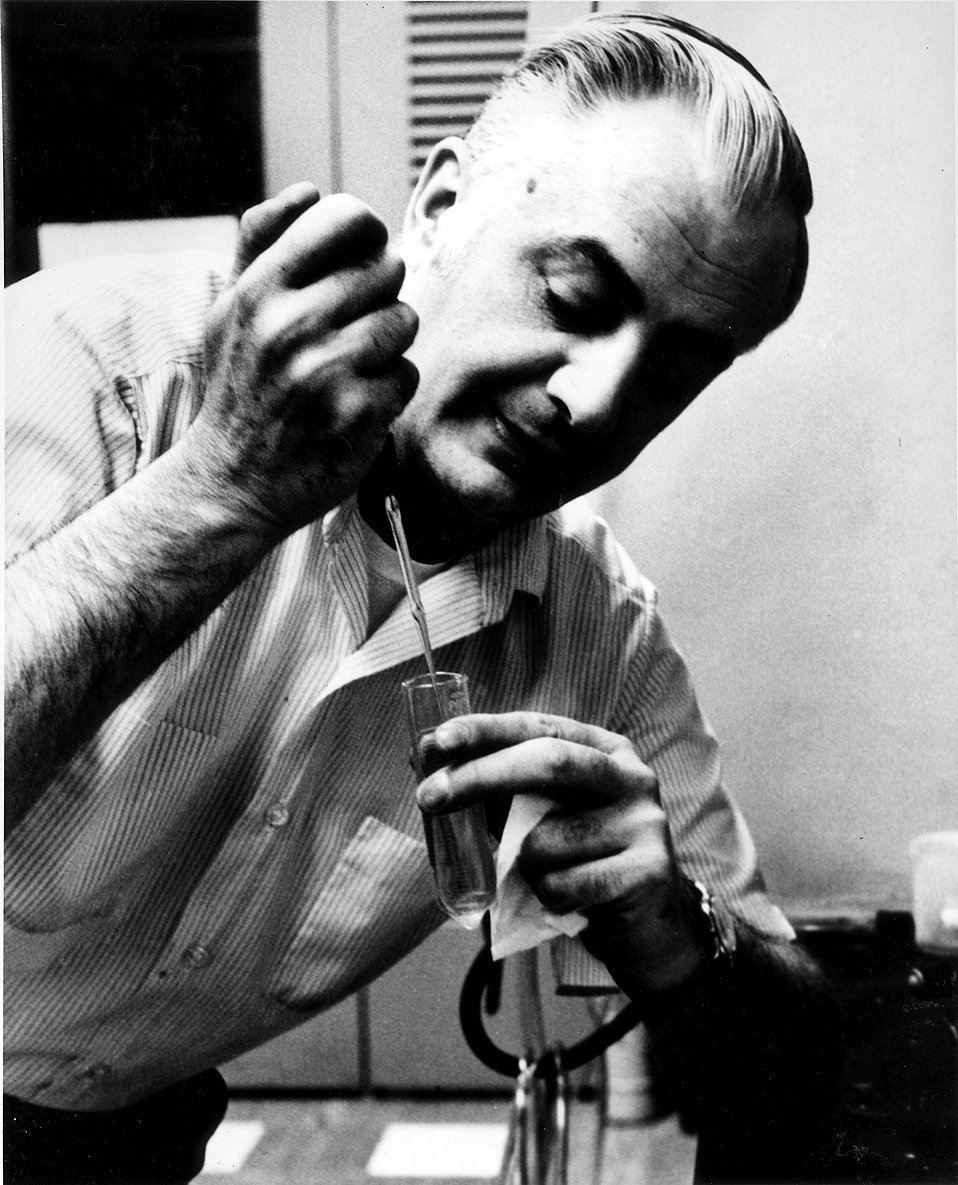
An Argonne chemist prepares a lunar sample for analysis.
c.1970